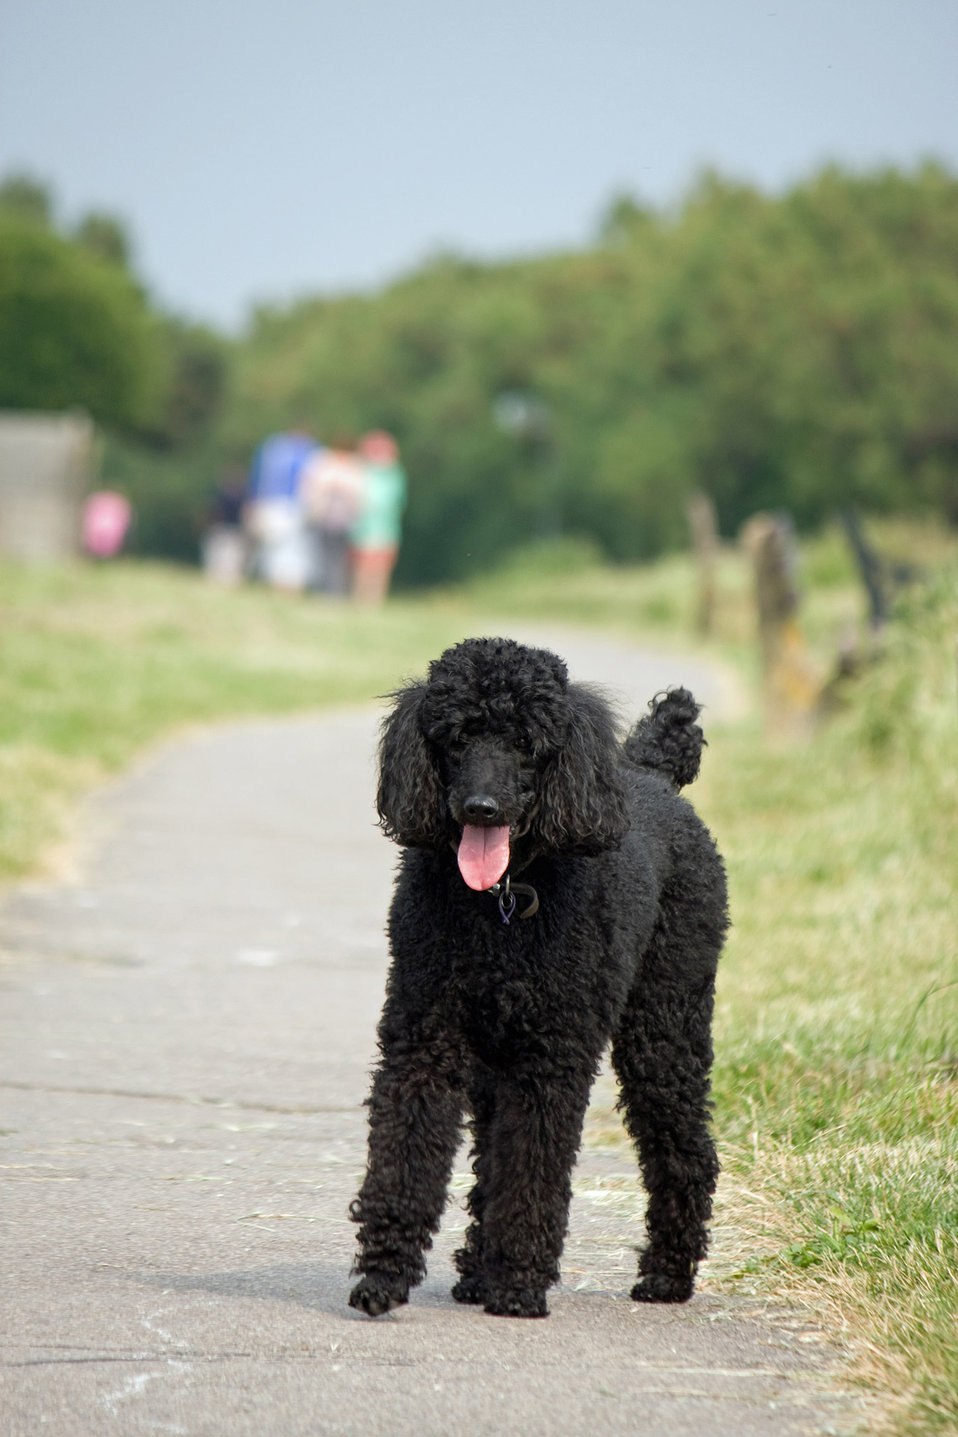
Poodle dog

Black standard poodle dog walking along a path in the summer.